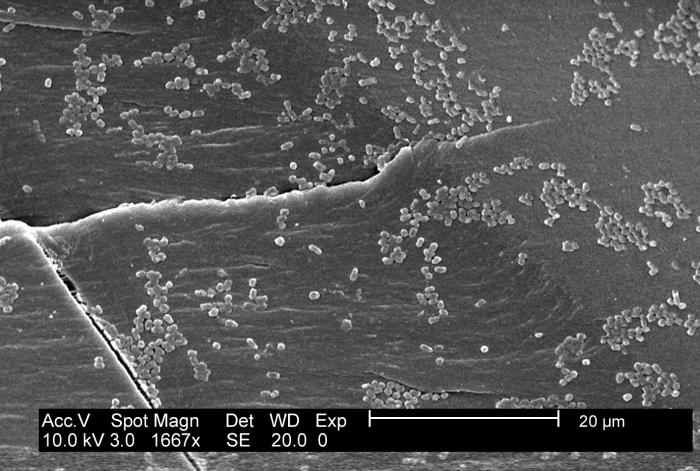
This SEM depicts an E. coli (ATCC 11775) biofilm grown on PC (polycarbonate) material using a CDC biofilm reactor.